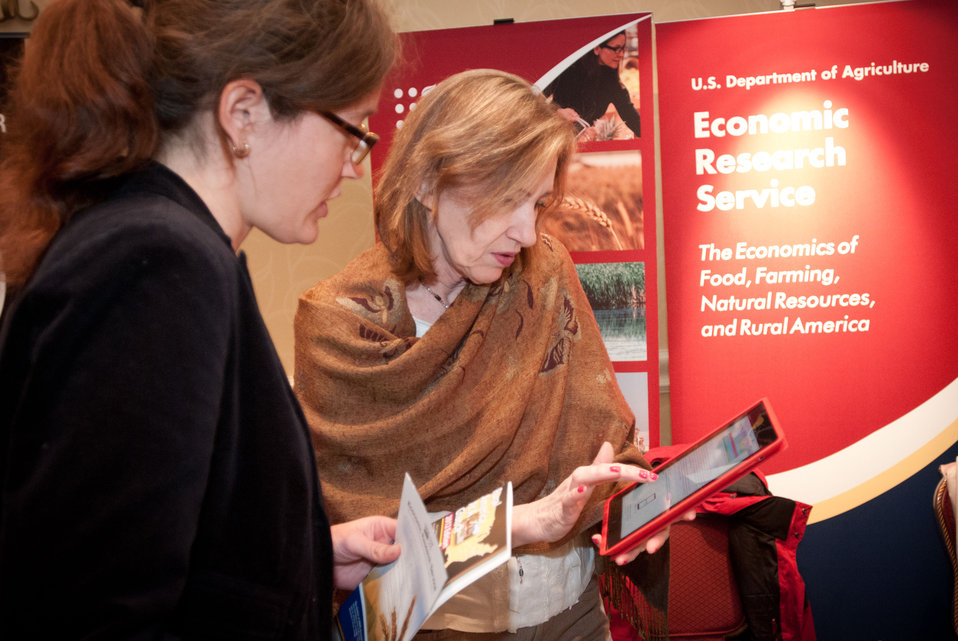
2013 Agricultural Outlook Forum, held at the Crystal Gateway Marriott Hotel, Arlington, Virginia on Thursday, Feb. 21, 2013. This annual Forum brings together producers, policymakers, business, government, and industry leaders to meet, exchange ideas, and discuss timely agriculture issues in the exhibit hall at the Ag Outlook Forum.